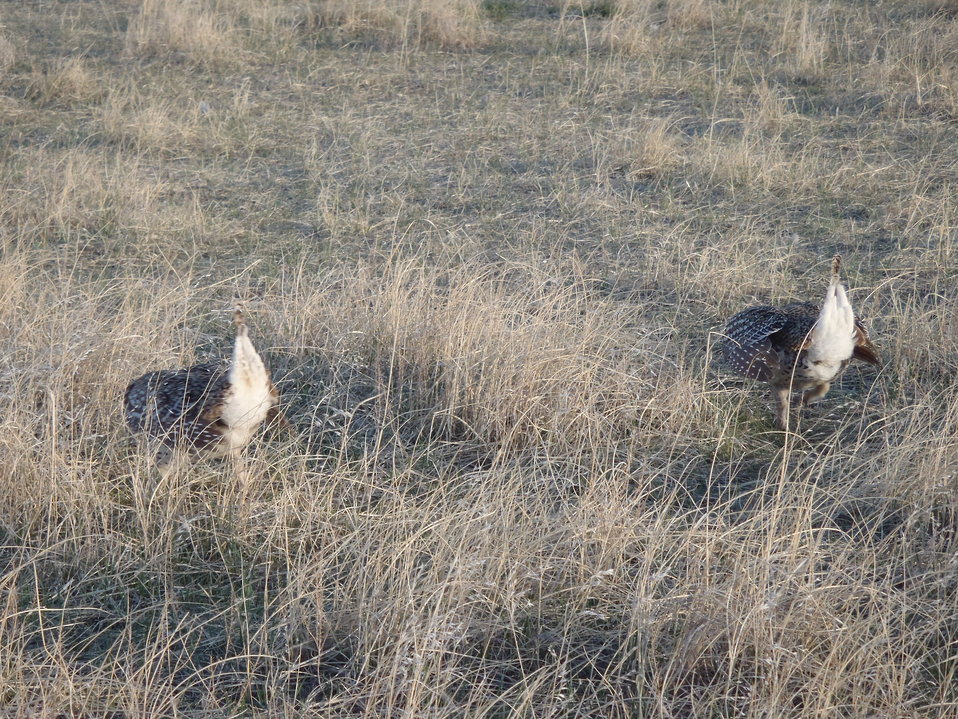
Sharp-tailed Grouse

The mating routine of sharp-tailed grouse involves males displaying communally at a traditional site (one used year after year). This site is known as a “lek.” Males compete for mates by performing a ritualized dance in conjunction with calling (often a booming sound) and inflating purplish air sacs along their necks. Females approach the edge of the lek, observe and eventually select a dance participant to mate with.